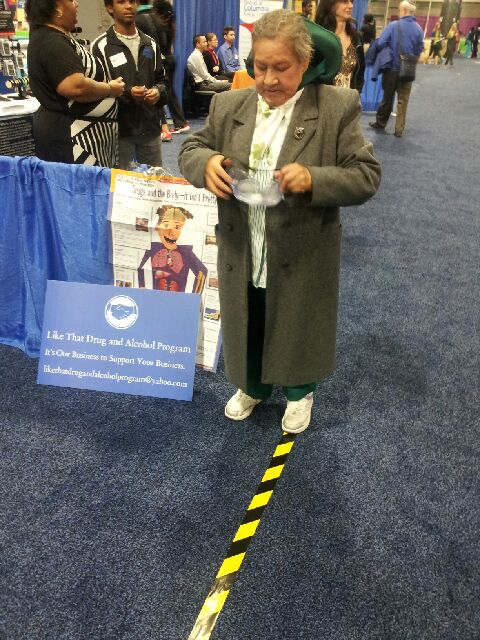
NBC4 Health and Wellness Expo January 11-12, 2014